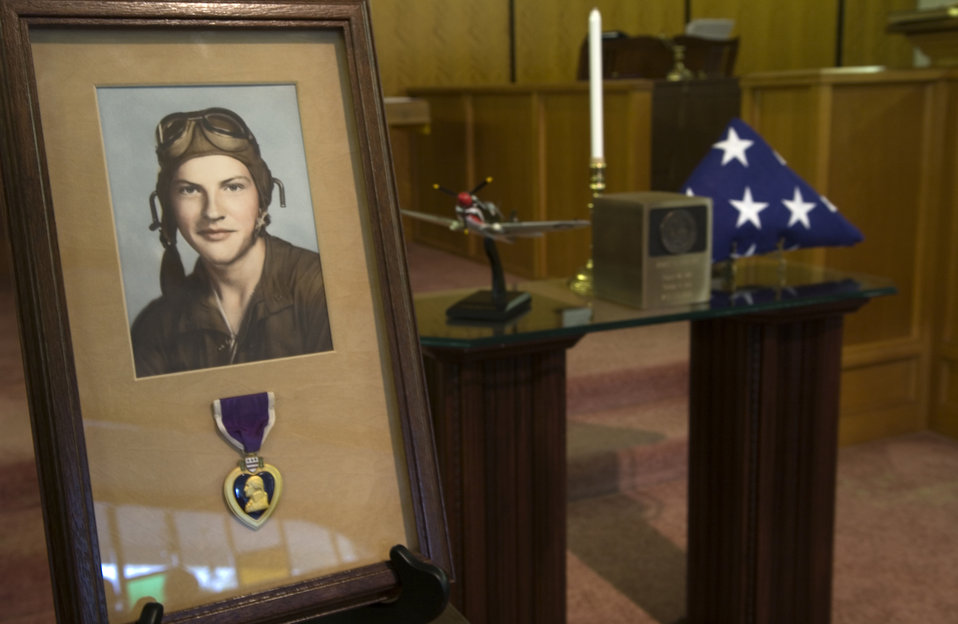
Pilot burial solves two mysteries

A photo of 2nd Lt. Robert Hoyle Upchurch, who was killed when his P-40 Warhawk crashed in China in 1944 during bad weather, is displayed during memorial services on Saturday, April 8, 2006, in High Falls, N.C. Lieutenant Upchurch was a member of the famed Flying Tigers during World War II and was listed as missing in action until his remains were identified last May by the Joint POW/MIA Accounting Command.